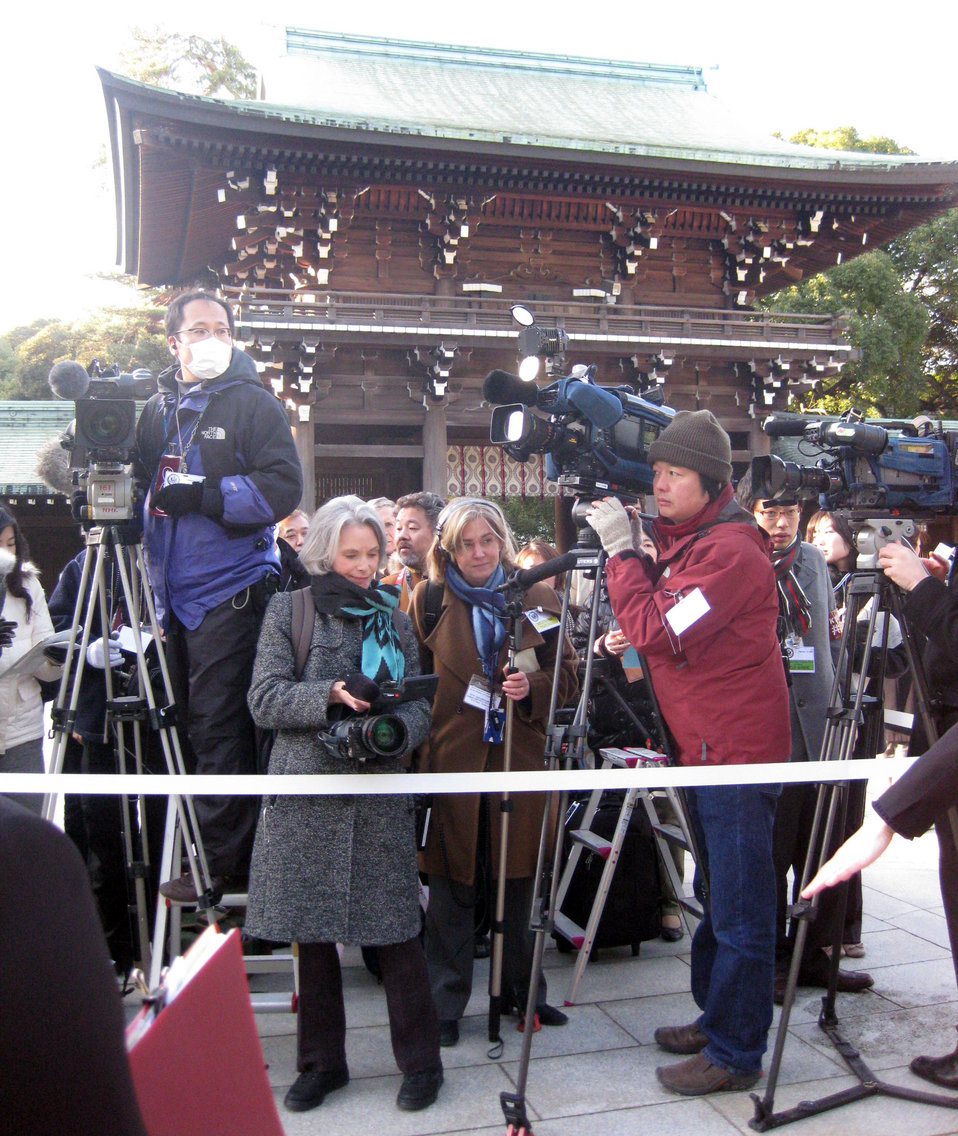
Meiji Shrine Press Preparations

Members of the press prepare for U.S. Secretary of State Hillary Clinton's visit to the Meiji shrine in Shibuya, Tokyo, Japan February 17, 2009.